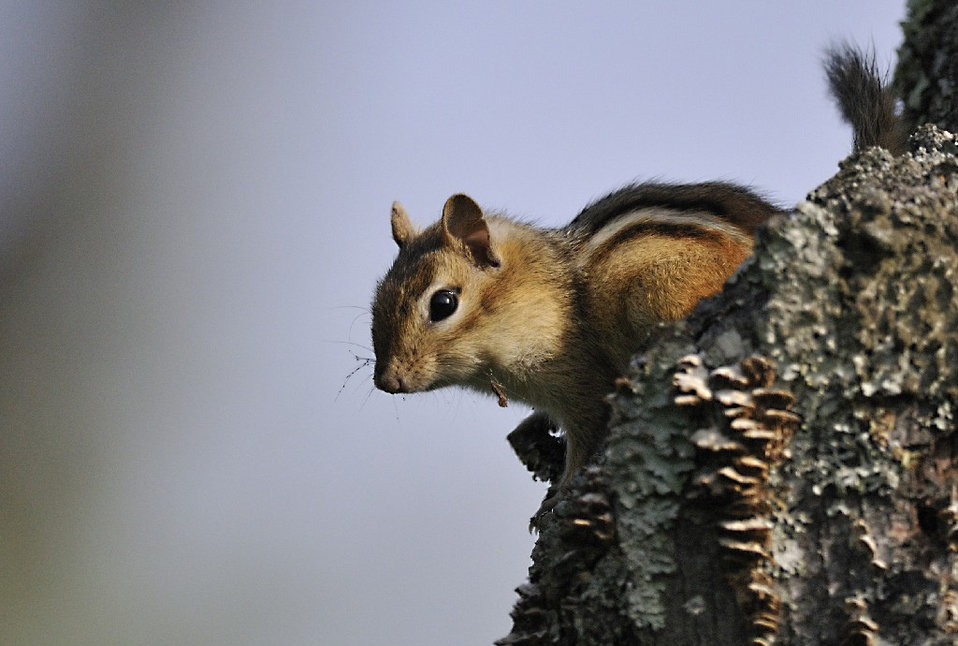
Photo of the Week - Eastern Chipmunk (MA)

Photo of the week - 8/22/2011

Eastern Chipmunk photographed at Hawley Bog, MA.